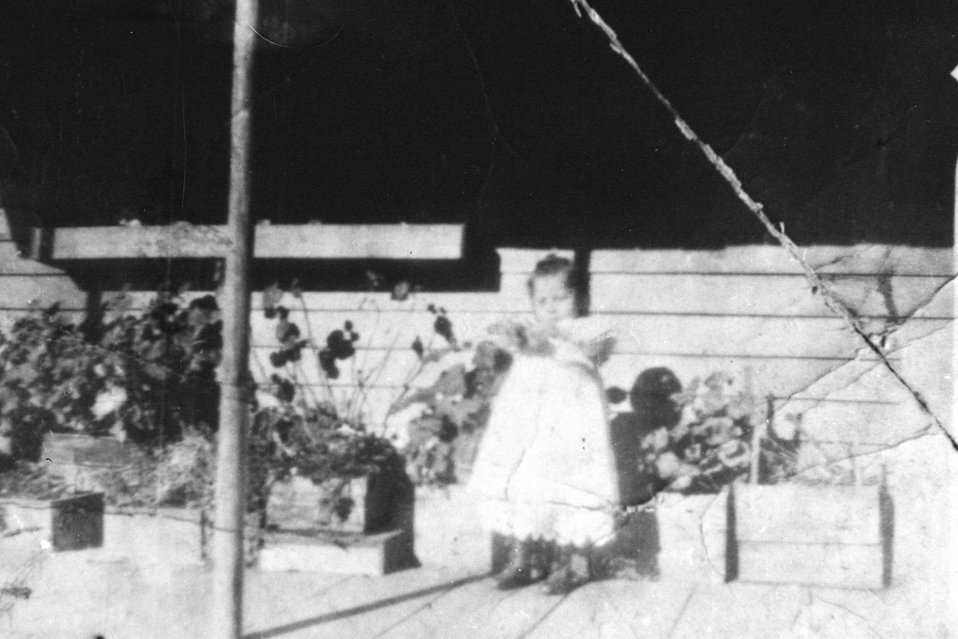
Alpine Billings at the ranch at Mule Creek.